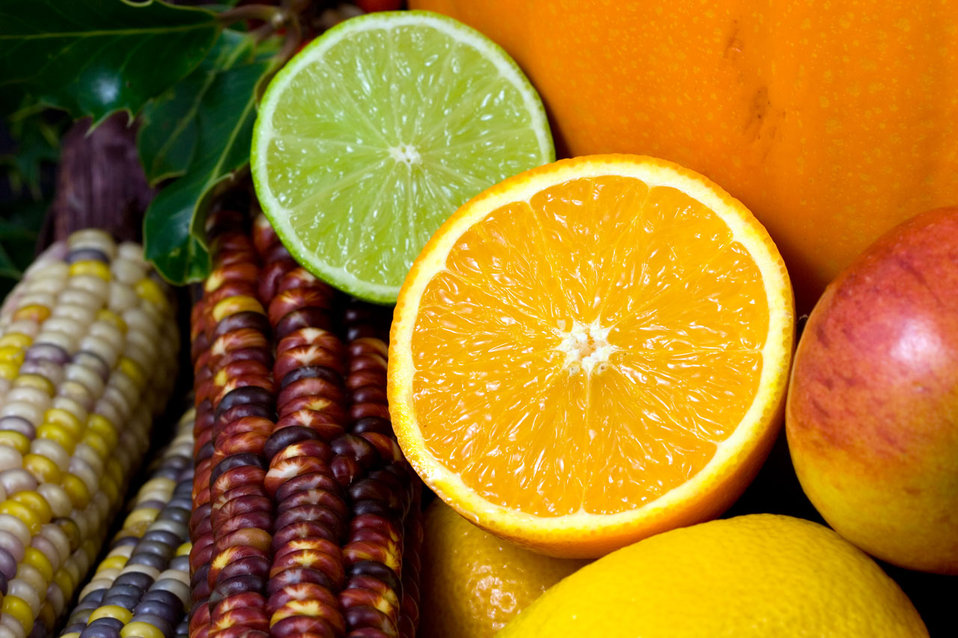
Various fruits

Various fruit (oranges, limes, corn, pumpkin, apple).